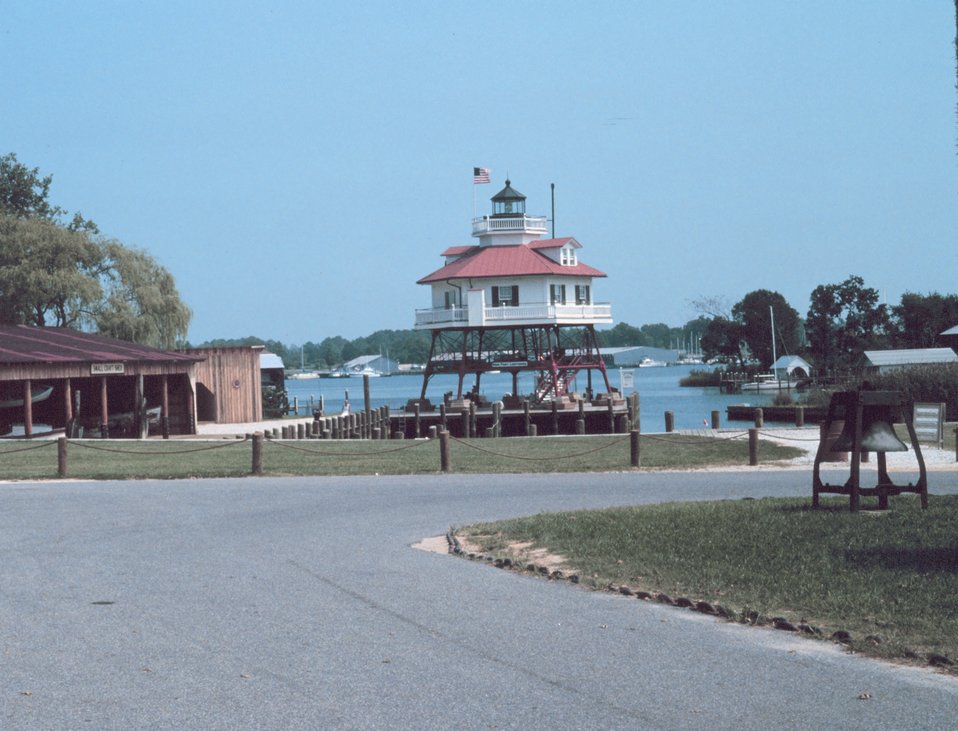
The Drum Point Lighthouse after being moved to Solomon's Island